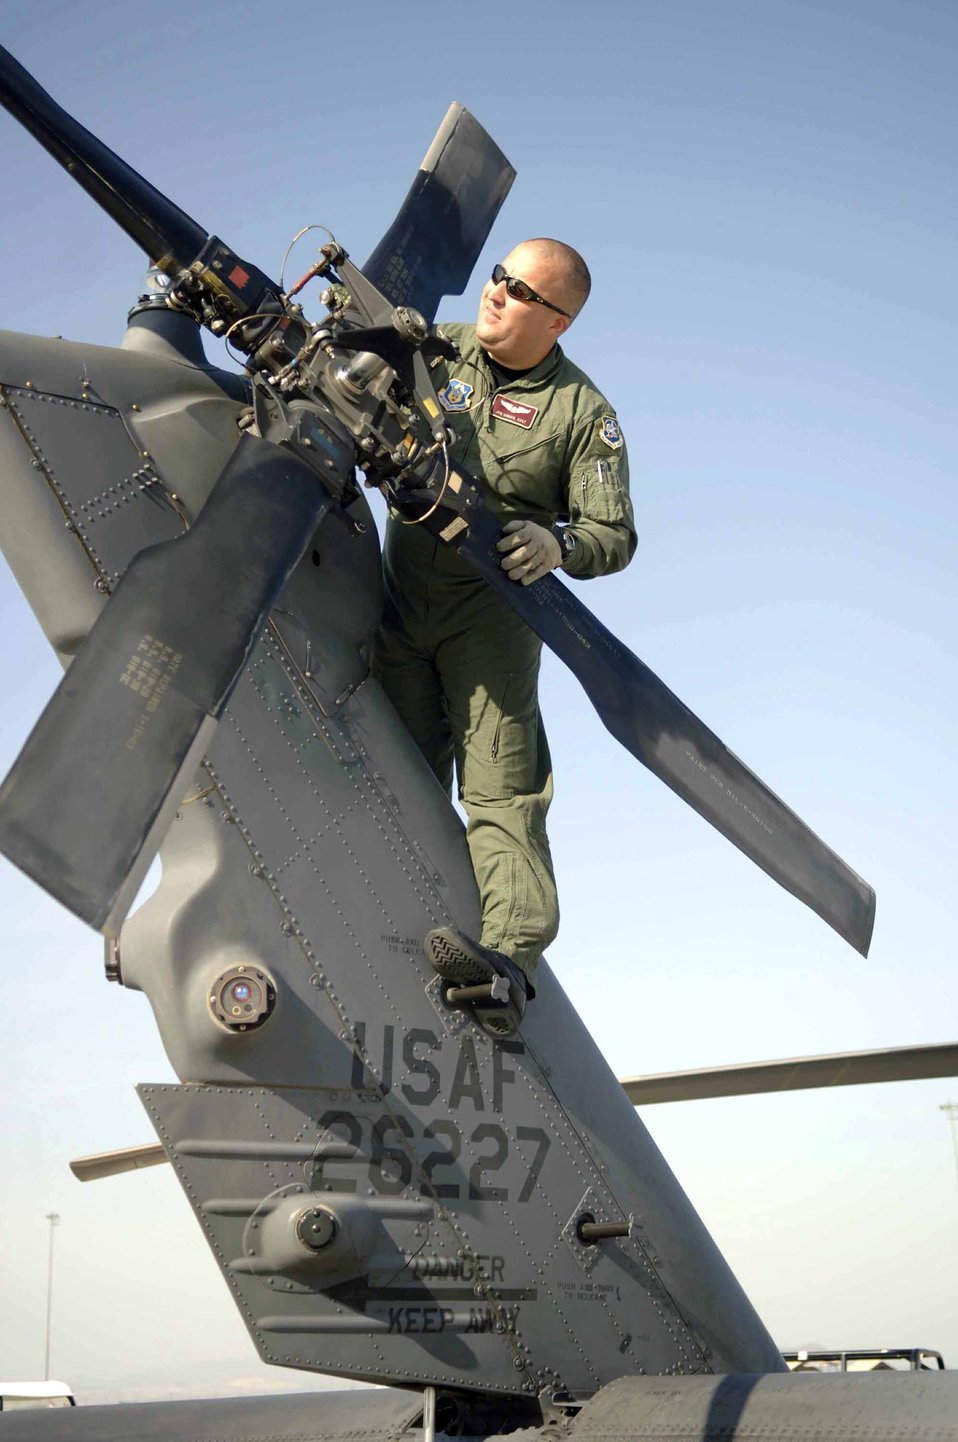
Angle Thunder

Staff Sgt. Jon Homan inspects an HH-60 Pave Hawk before a mission to Gila Bend, Ariz., on July 25 for Exercise Angel Thunder. The five-day exercise at Davis-Monthan Air Force Base, Ariz., and other areas is designed to provide realistic combat search and rescue training for active-duty, Reserve and Guard Airmen in combat rescue forces. Sergeant Homan is a flight engineer with the 305th Rescue Squadron.